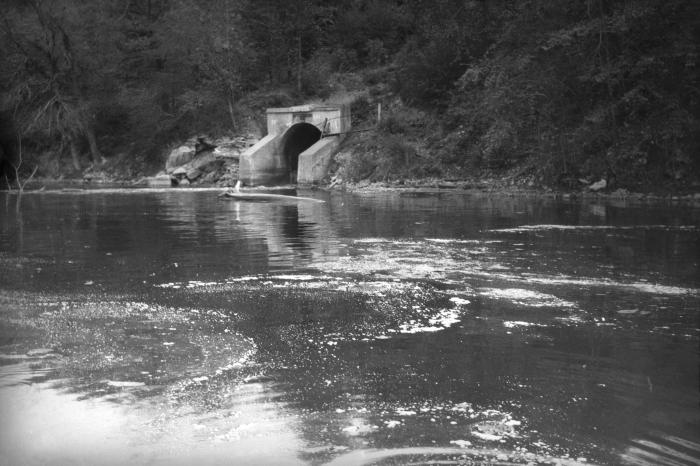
This historic 1928 photograph highlighted the Somerville Avenue sewer outlet where it would dump its contents into the Mississippi River as the river passed through St. Paul, Minnesota.